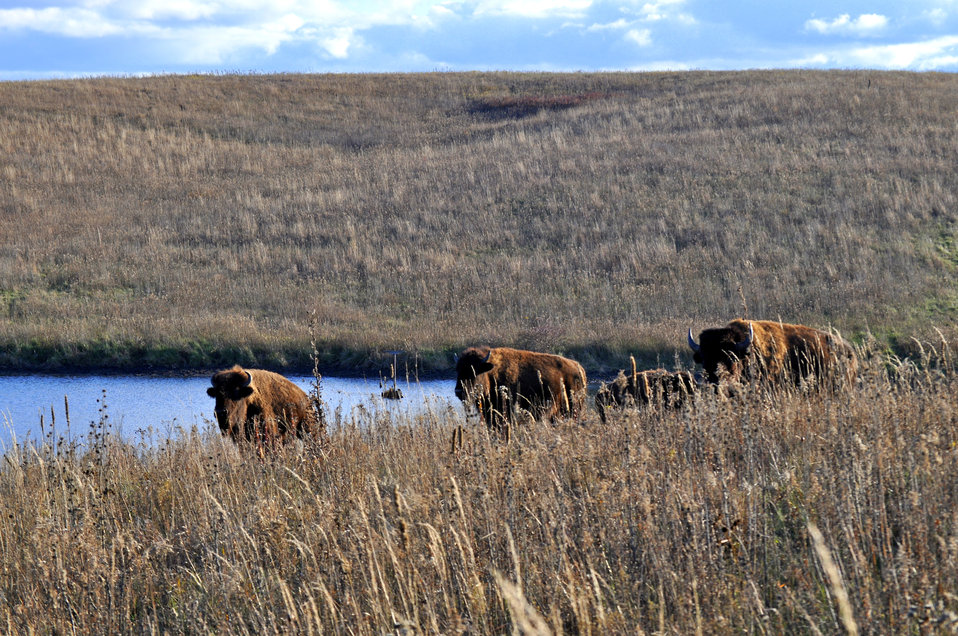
Bison at Dunn Ranch, an a prairie restored by The Nature Conservancy in northwest Missouri.